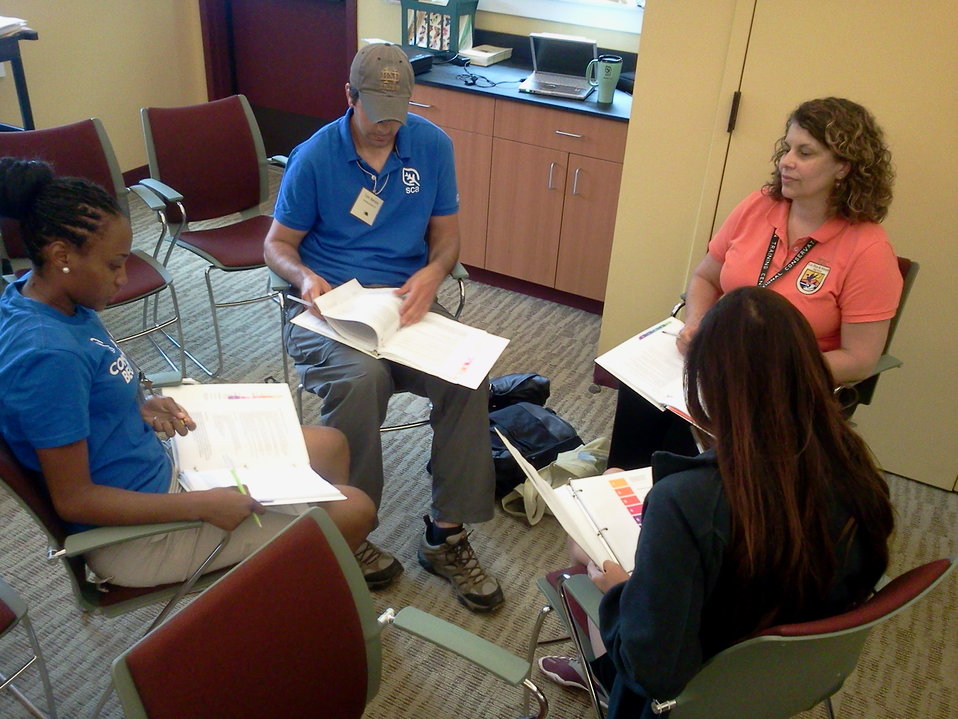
Mentor and Mentees

Senior Public Affairs Specialist in the Regional Office and mentor, Terri Edwards talks advises her mentees.